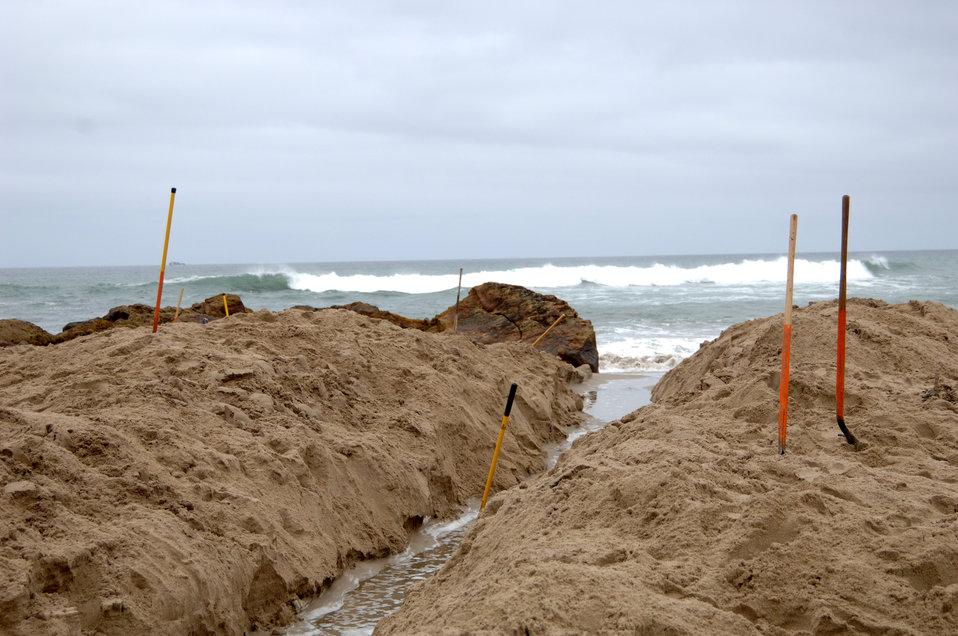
Pescadero Breach 13